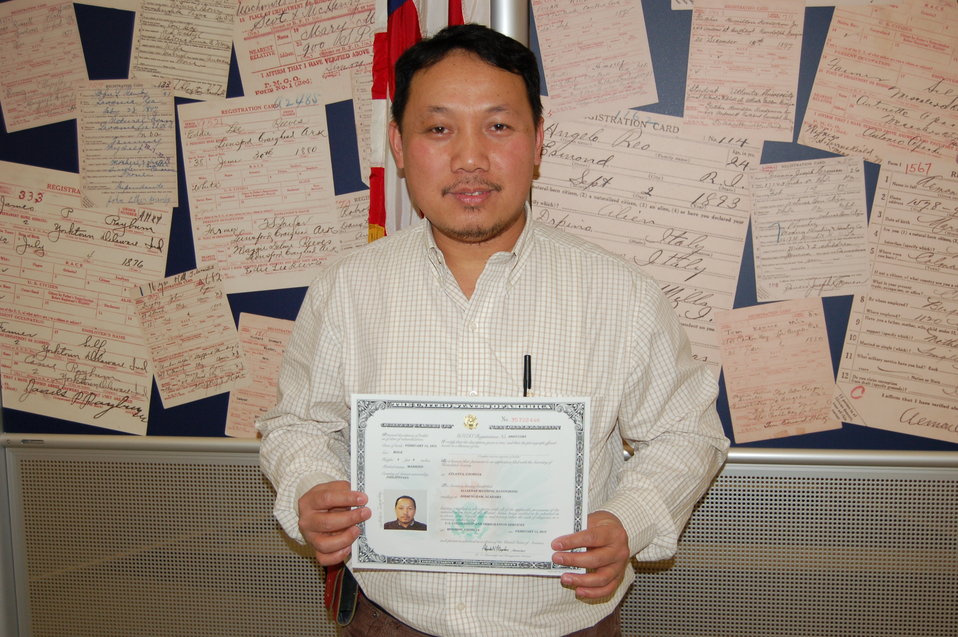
New Citizens